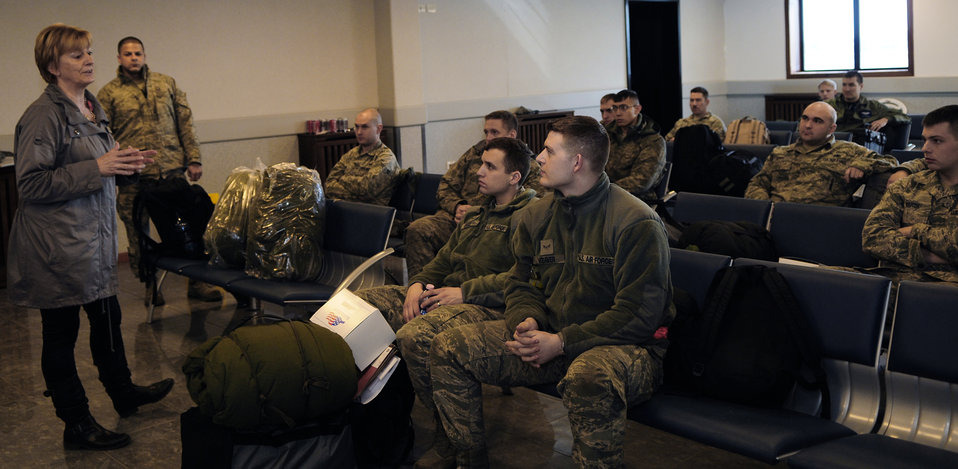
Odyssey Dawn

Lia Scandola, 31st Fighter Wing ground safety technician, briefs incoming temporary duty support personnel on safety hazards and Italian laws upon their arrival at Aviano Air Base, Italy March 20, 2011. The personnel came from Royal Air Force Lakenheath, U.K., and Spangdahlem AB, Germany, to support Operation Odyssey Dawn. Joint Task Force Odyssey Dawn is the U.S. Africa Command task force established to support the larger international response to the unrest in Libya. A broad coalition of nations are partnering to enforce U.N. Security Council Resolution (UNSCR) 1973, which authorizes all necessary means to protect civilians in Libya under threat of attack by Qadhafi regime forces. JTF Odyssey Dawn is commanded by Admiral Samuel J. Locklear, III.